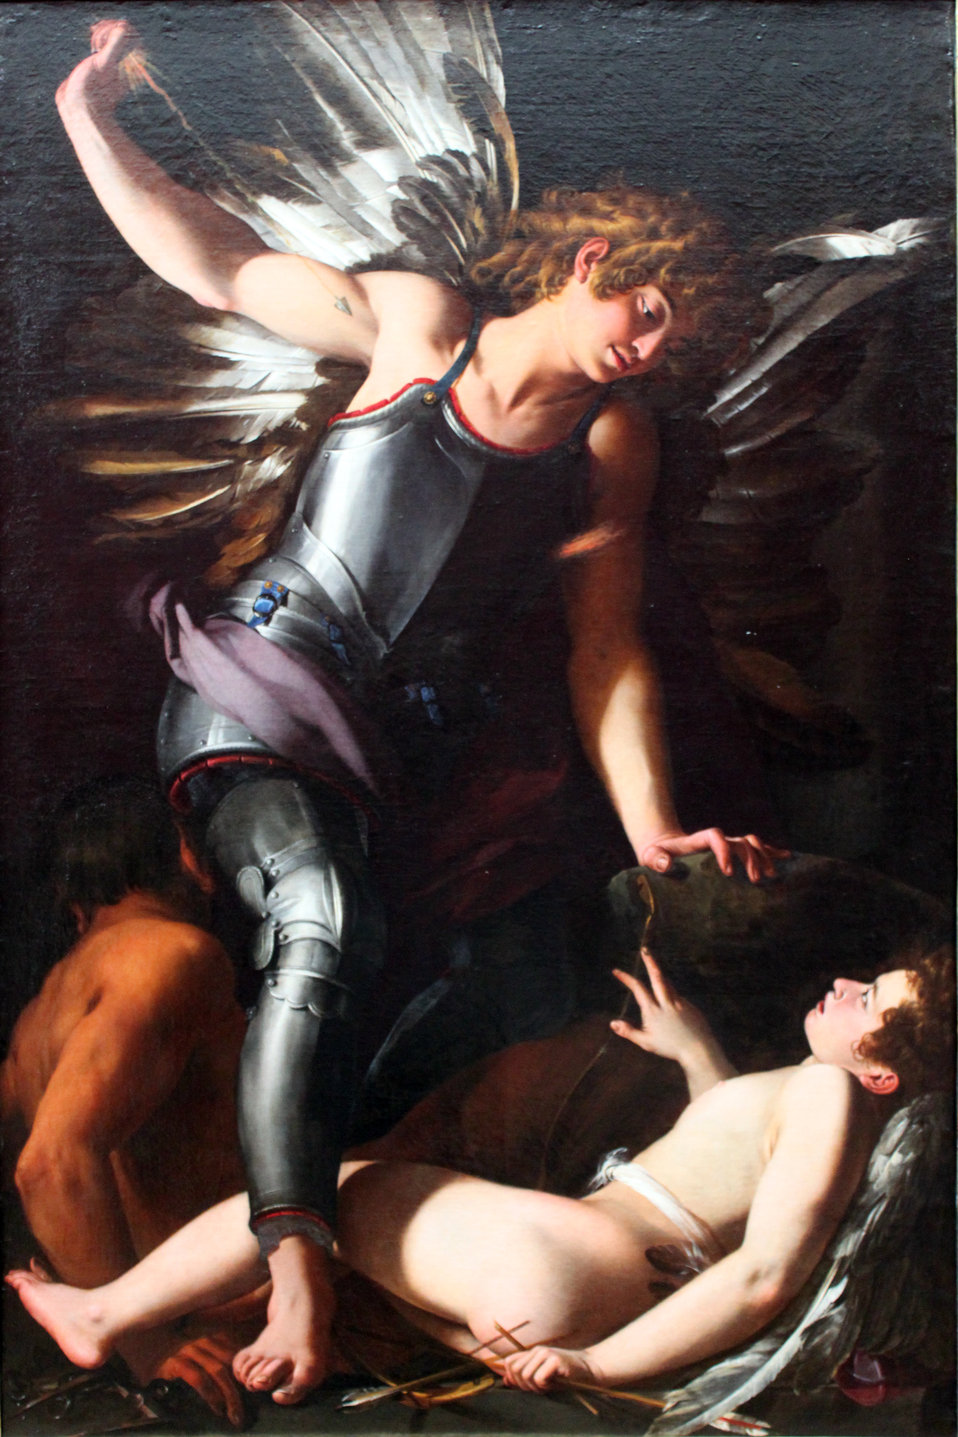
The Heavenly Amor defeats the earthly Amor Deutsch: Der himmlische Amor besiegt den irdischen Amor